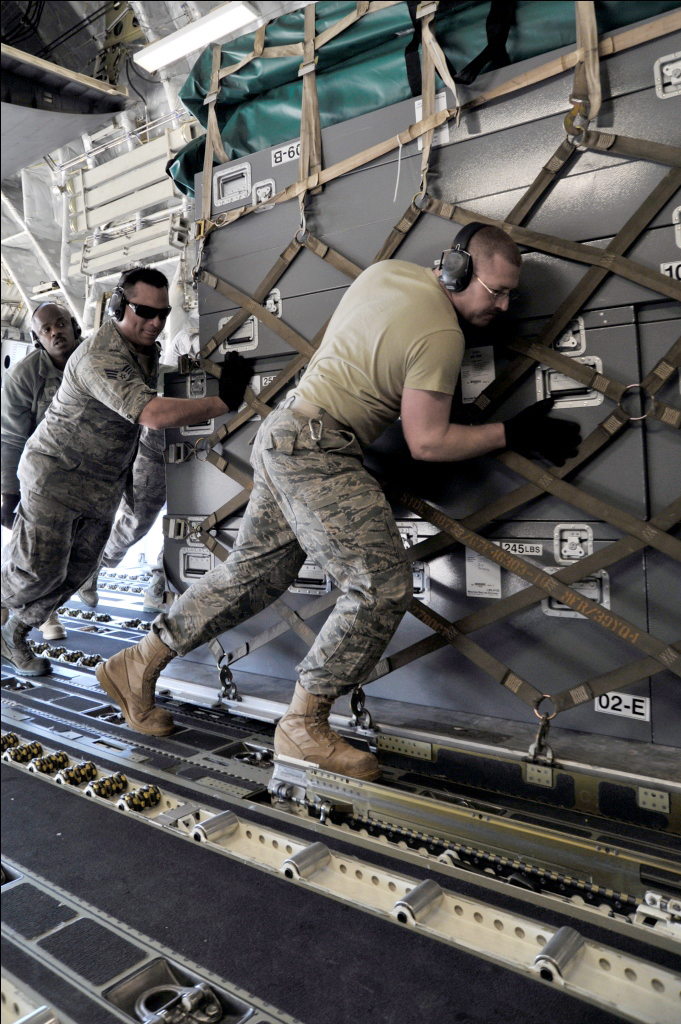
Mobility Airmen

Airmen from the 89th Aerial Port Squadron load pallets onto a C-17 Globemaster III on March 12, 2011, at Joint Base Andrews, Md. Air transportation Airmen from the 89th APS created 14 pallets of technical search and rescue gear, to include inflatable swift-water rescue boats, generators, trench rescue and cutting equipment. The gear is being transported by C-17 to more than 80 Fairfax County Urban Search and Rescue technicians, to provide assistance in the rescue effort after an earthquake and tsunami hit Japan on March 11, 2011.